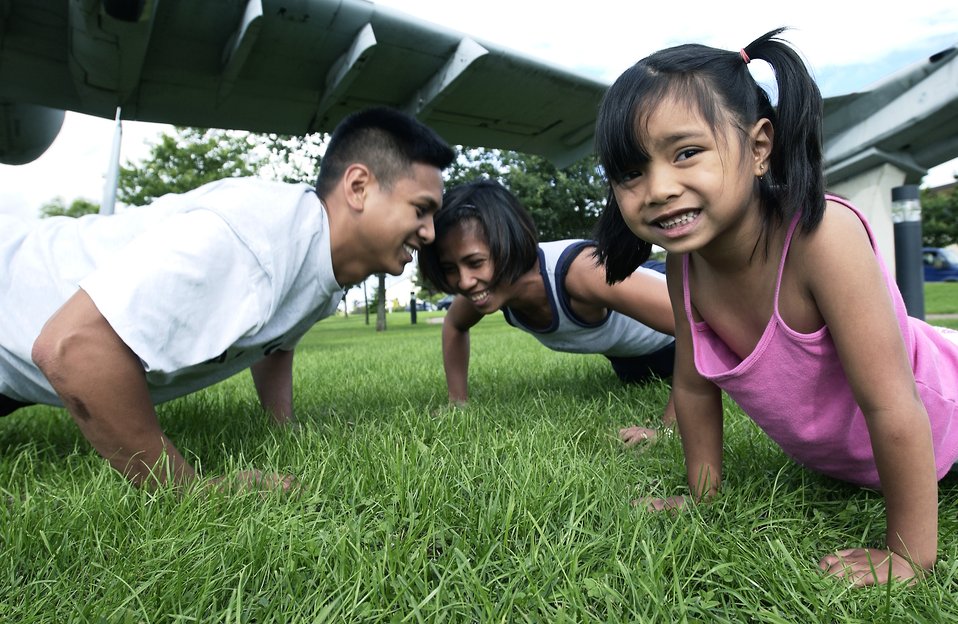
Airmen brace for new fitness test

SPANGDAHLEM AIR BASE, Germany -- Staff Sgts. Rodolfo (left) and Mary Anne Reyes have made working out a family affair. Five-year-old Reanna shows her warrior spirit by doing push-ups with her mom during daily workouts at home.